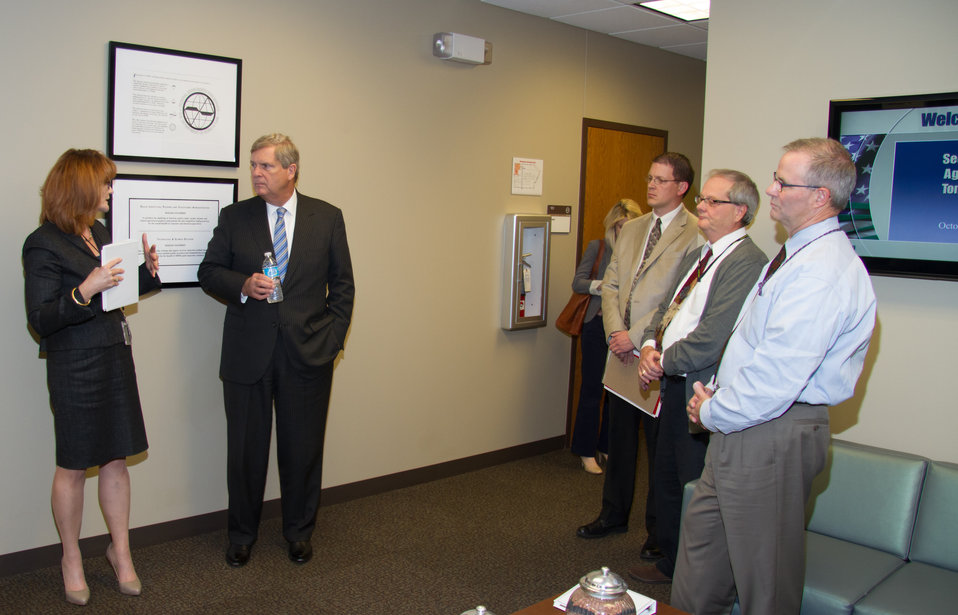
Mary Alonzo, Director of Grain Inspection, Packers and Stockyards Administration (GIPSA), Technology and Science Division welcomed Agriculture Secretary Tom Vilsak to the National Grain Center (NGC), in Kansas City, MO, on Wednesday, Oct. 23, 2013.